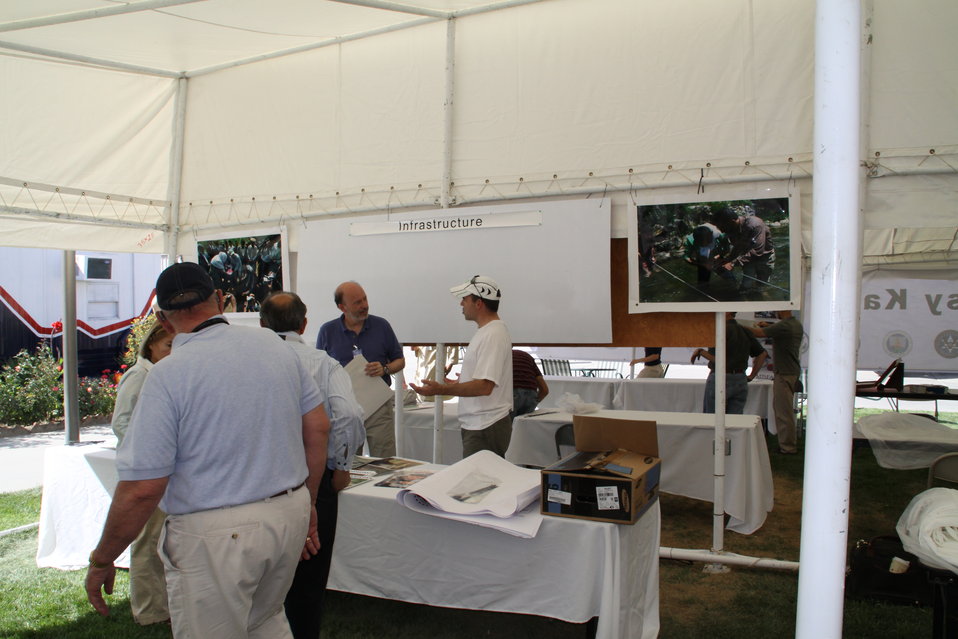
Official July 4th Event Preparation